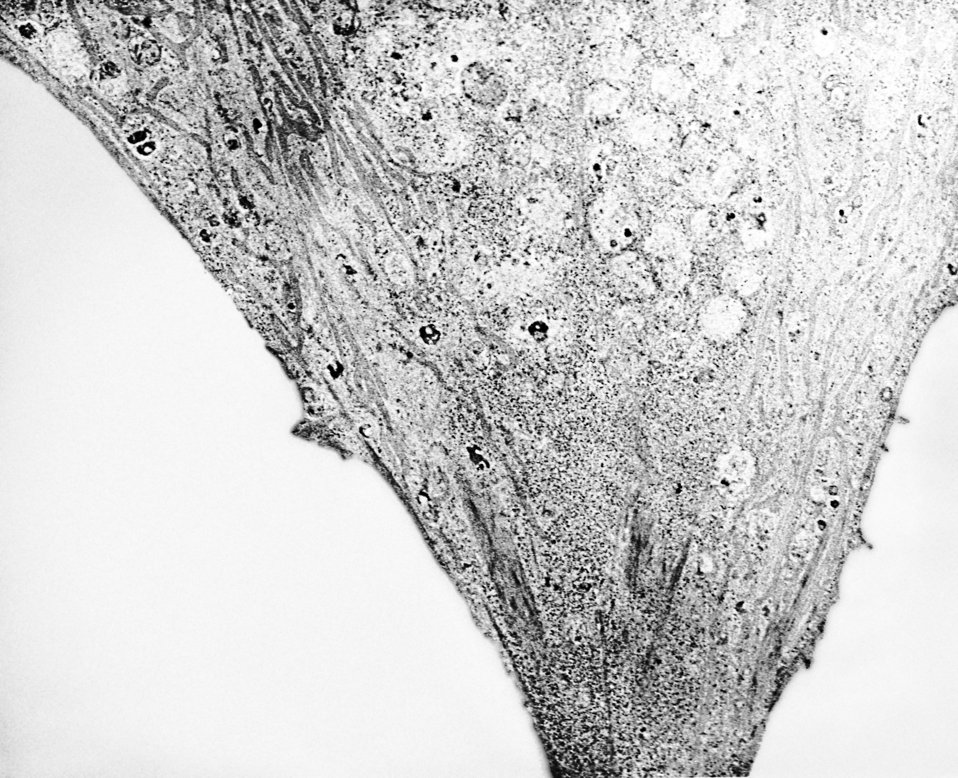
Electron micrograph of Treponema pallidum on cultures of cotton-tail rabbit epithelium cells (Sf1Ep).